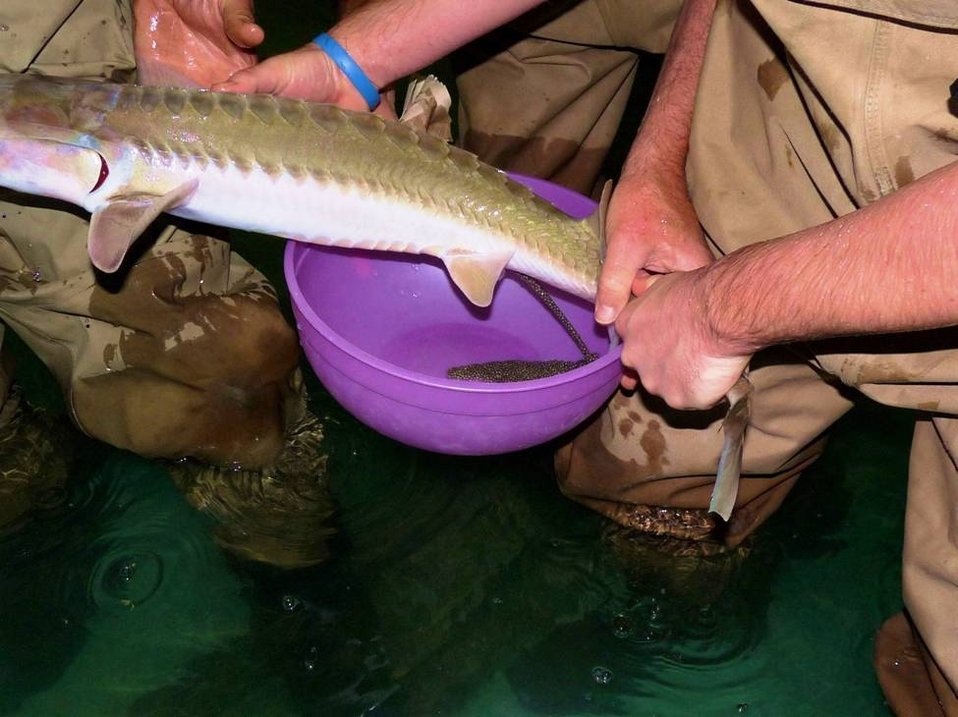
Spawning a pallid sturgeon at Gavins Point National Fish Hatchery. The Gavins Point NFH in South Dakota holds a captive refugia broodstock population of pallid sturgeon as provided in the species' recovery plan. Broodstock are adult fish retained for spawning.